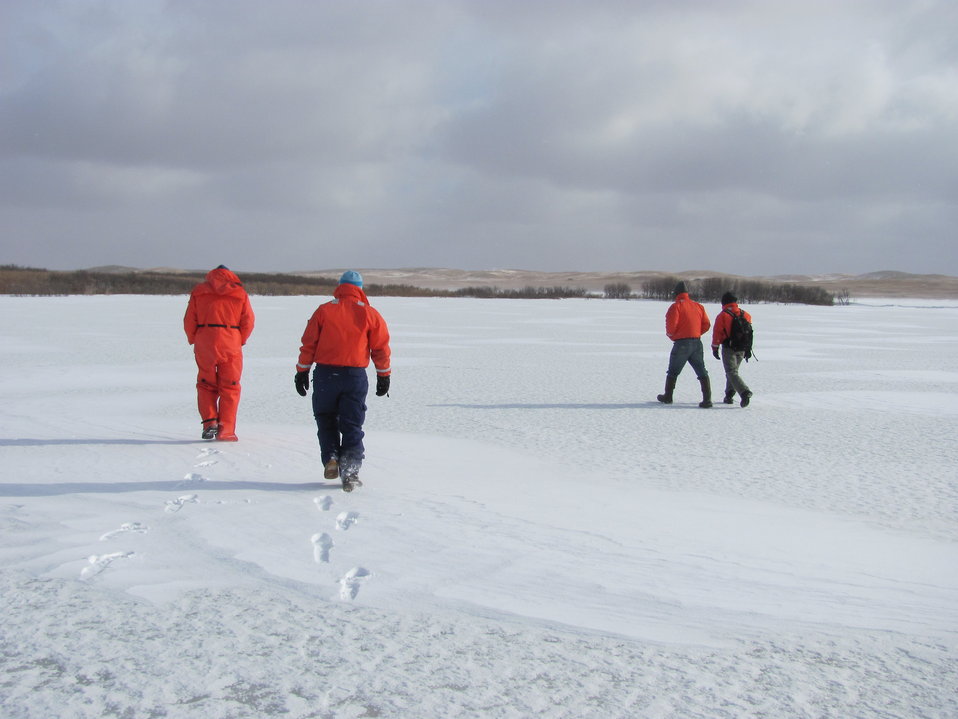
Walking to the South Island of Chase Lake NWR for Nest Tagging

Staff from Northern Prairie Wildlife Research Center (Jamestown, ND) and USFWS walked across the frozen ice to the south island of Chase Lake National Widlife Refuge to place nest tags for the heron and egret nest count in the summer.